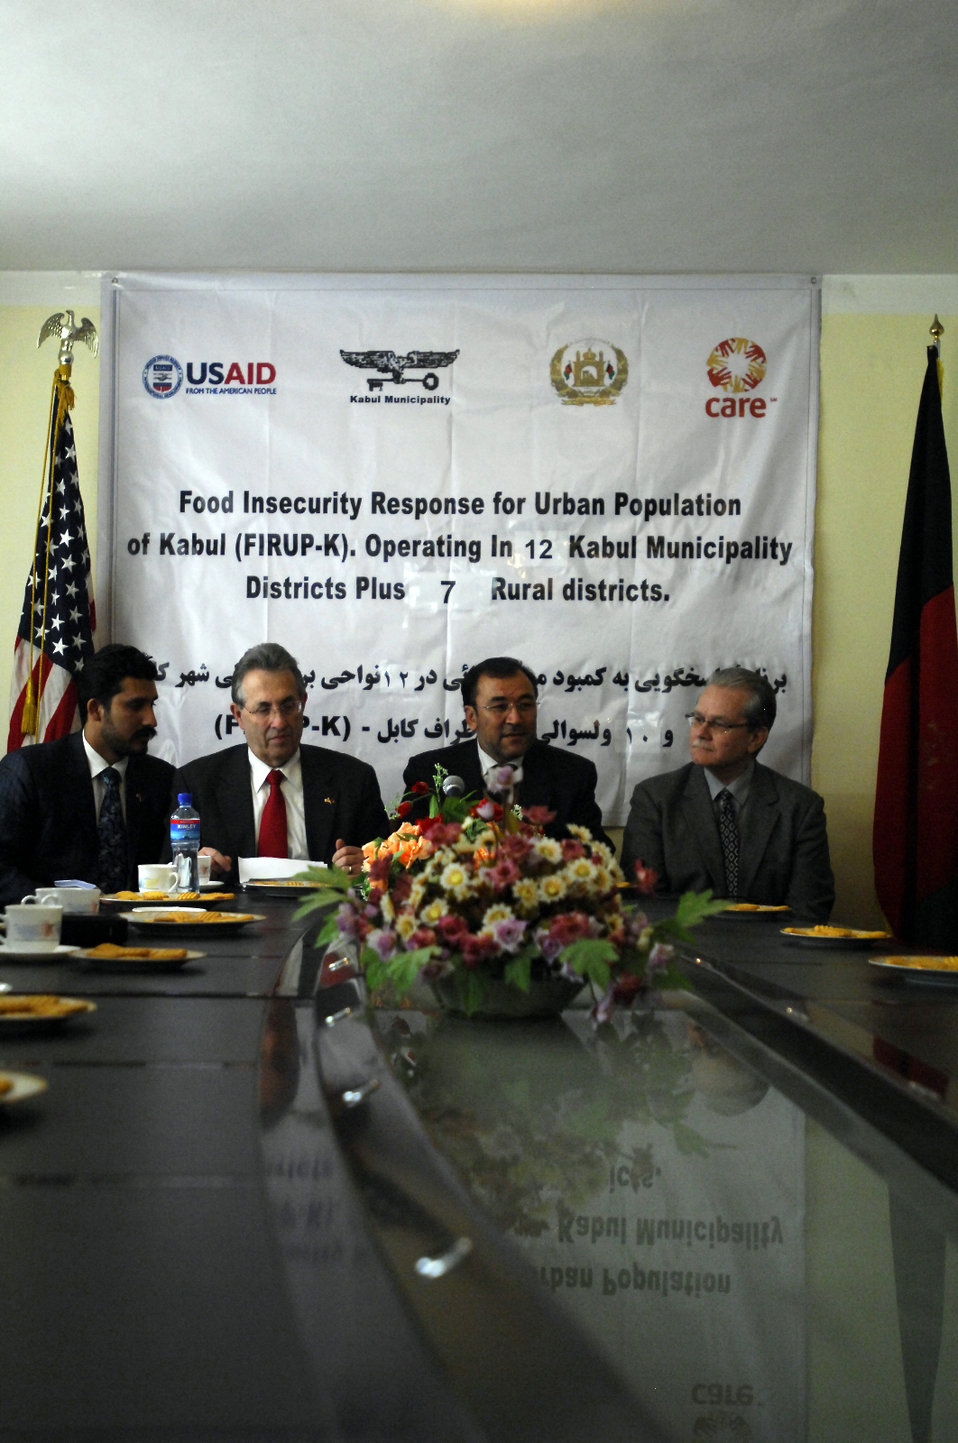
Care79 (1)